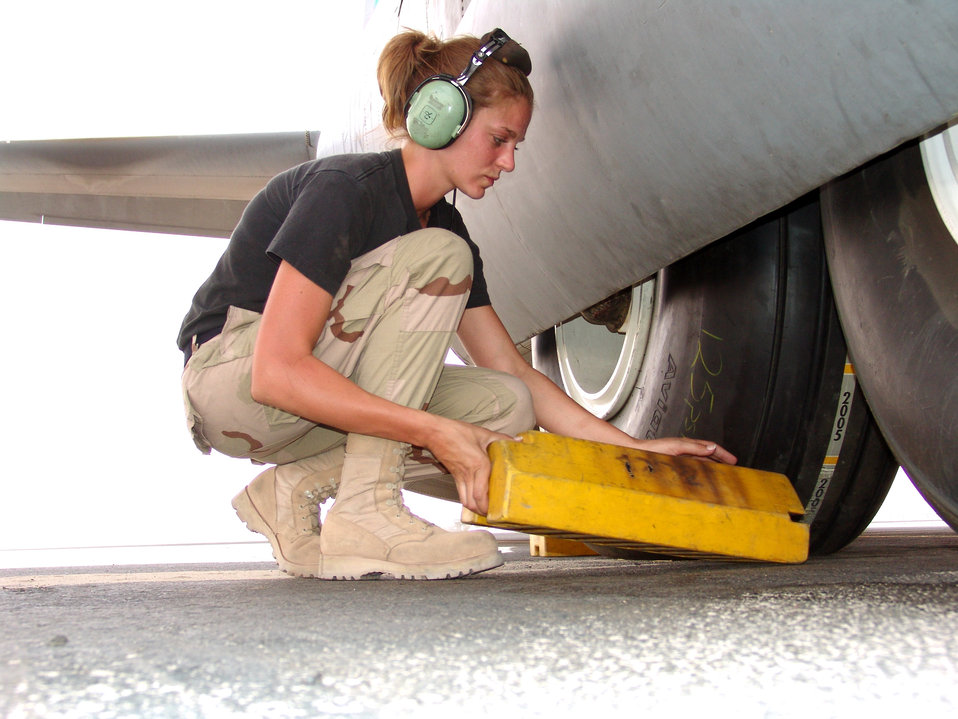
Ready for takeoff

SOUTHWEST ASIA -- Airman 1st Class Anna Cushenberry pulls chocks from the wheels of a C-130 Hercules ready to depart on a combat airlift mission to Kirkuk Air Base, Iraq. The 386th Air Expeditionary Wing is responsible for tactical airlift into and out of Iraq supporting Operation Iraqi Freedom. Airman Cushenberry is a crew chief with the 386th Expeditionary Aircraft Maintenance Squadron at a forward-deployed location and is from Dyess Air Force Base, Texas.